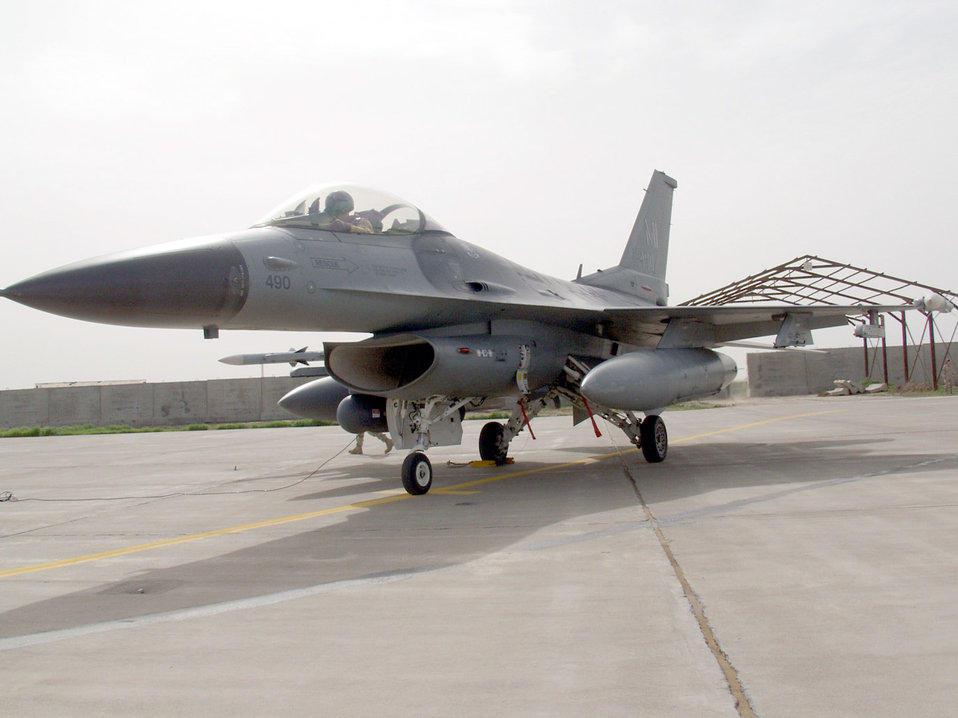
F-16s arrive at Kirkuk

KIRKUK AIR BASE, Iraq -- An F-16 Fighting Falcon from Selfridge Air National Guard Base, Mich., sits on the ramp after it arrived here March 1. F-16s are replacing A-10 Thunderbolt II aircraft of the 354th Expeditionary Fighter Squadron from Davis-Monthan Air Force Base, Ariz. The base is now home to the only operational squadron of F-16s in Iraq.